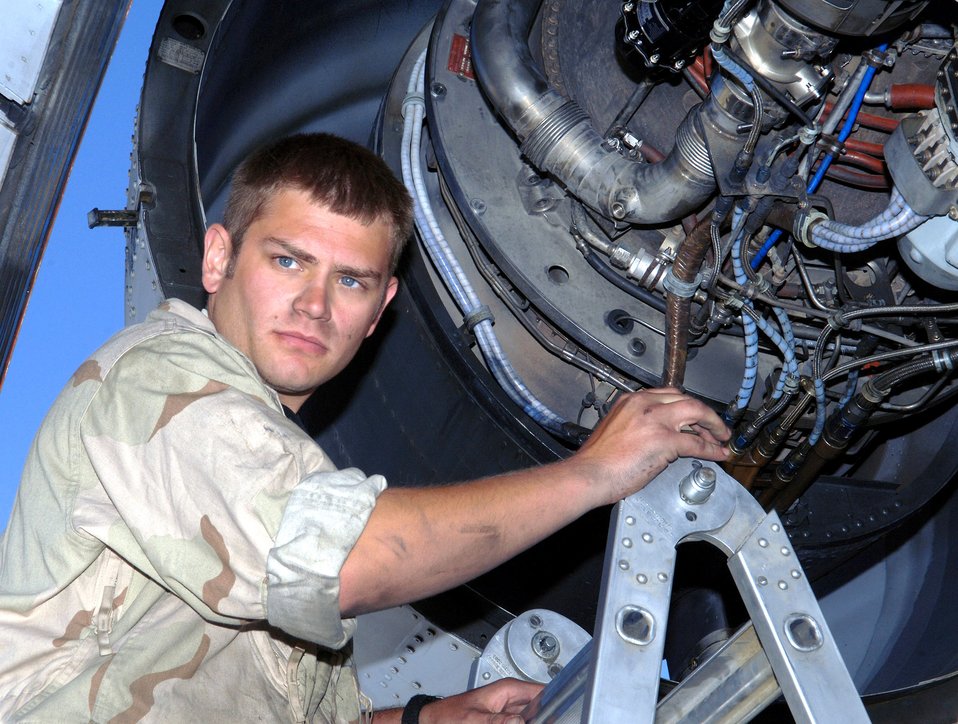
Airpower summary for July 29, 2007

Staff Sgt. James Stage troubleshoots the engine of an A-10 Thunderbolt II at Bagram Air Base, Afghanistan. Sergeant Stage is a 354th Expeditionary Aircraft Maintenance Unit propulsion technician deployed from Davis-Monthan Air Force Base, Ariz.